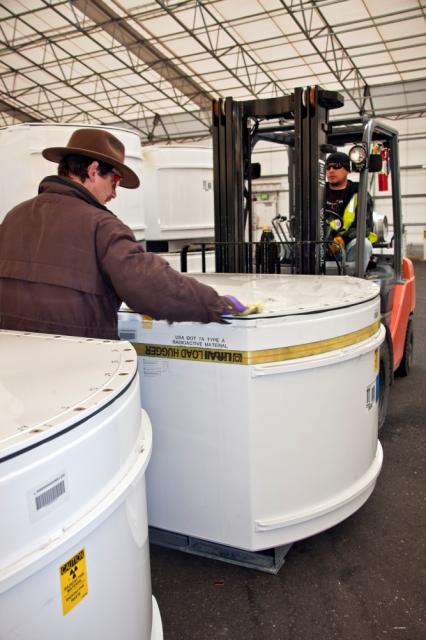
New Facility Aids in Lab’s Capability to Ship TRU Waste to WIPP

Workers move standard waste boxes to the High-Energy Real Time Radiography facility.

The High-Energy Real Time Radiography (HE-RTR) facility allows the LANL TRU Waste Program to x-ray waste drums that contain high-density items such as motors and pumps and larger containers known as standard waste boxes.